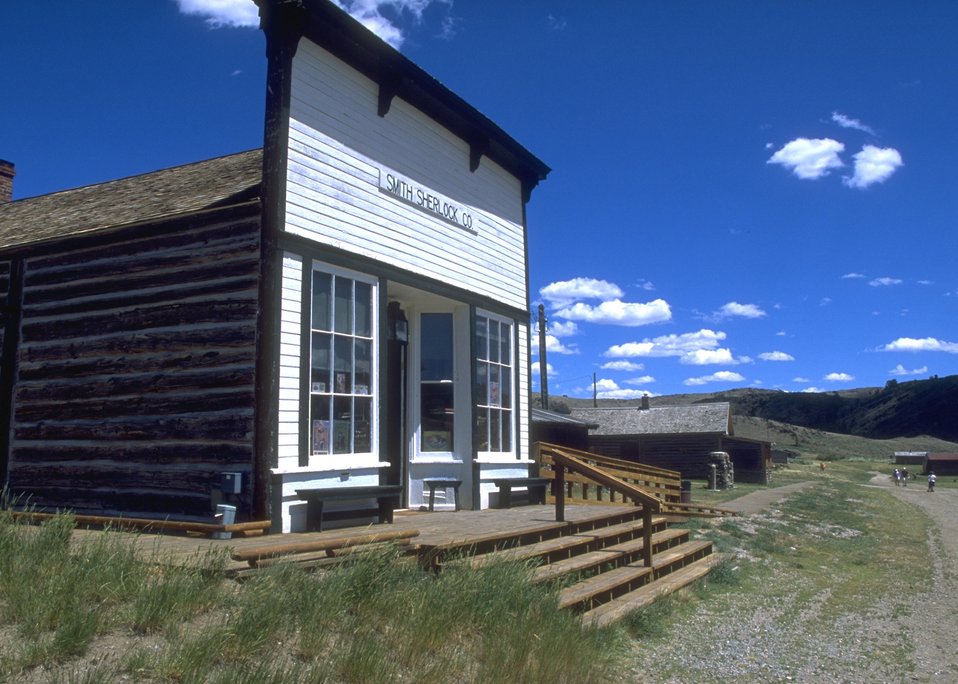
Restored buildings at South Pass City, Lander Field Office.